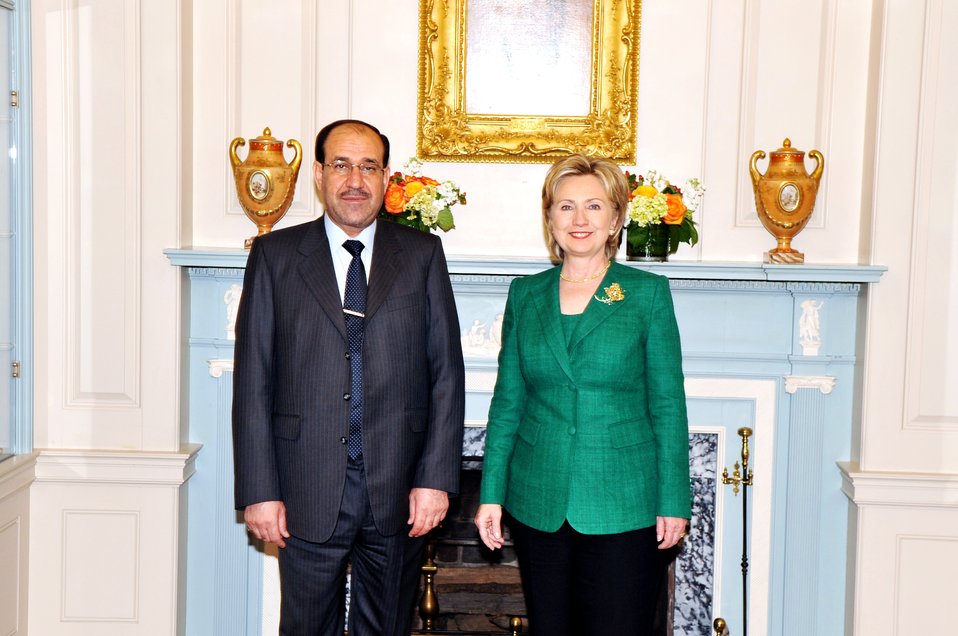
Secretary Clinton Holds Bilarteral Meeting with Iraqi Prime Minister

U.S. Secretary of State Hillary Rodham Clinton holds a press availability with His Excellency Nouri al-Maliki, Prime Minister of the Republic of Iraq at the U.S. Department of State in Washington, DC July 24, 2009.